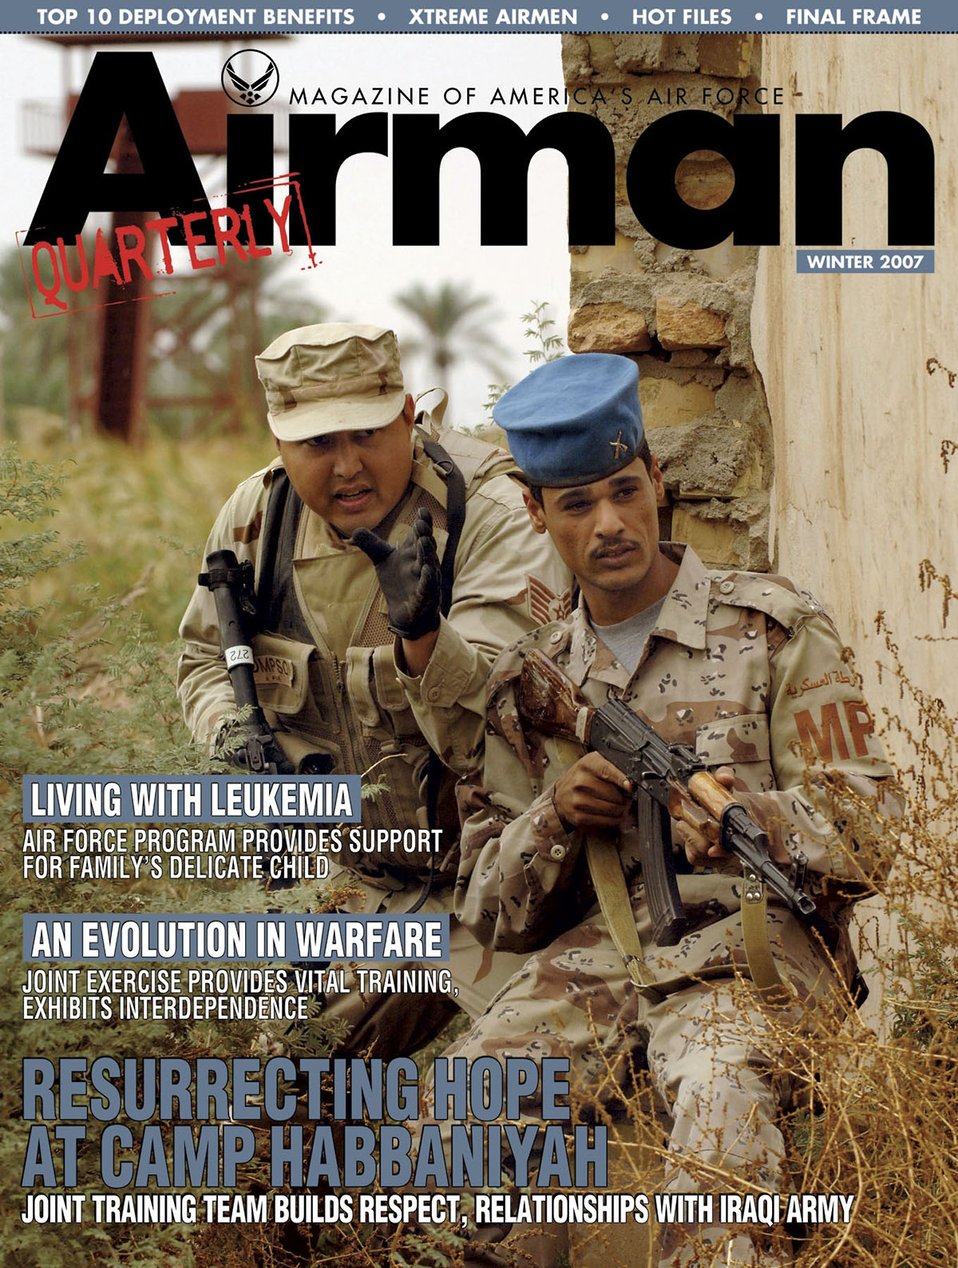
Winter 2007 quarterly issue of Airman available online

Airman Magazine Winter 2007.